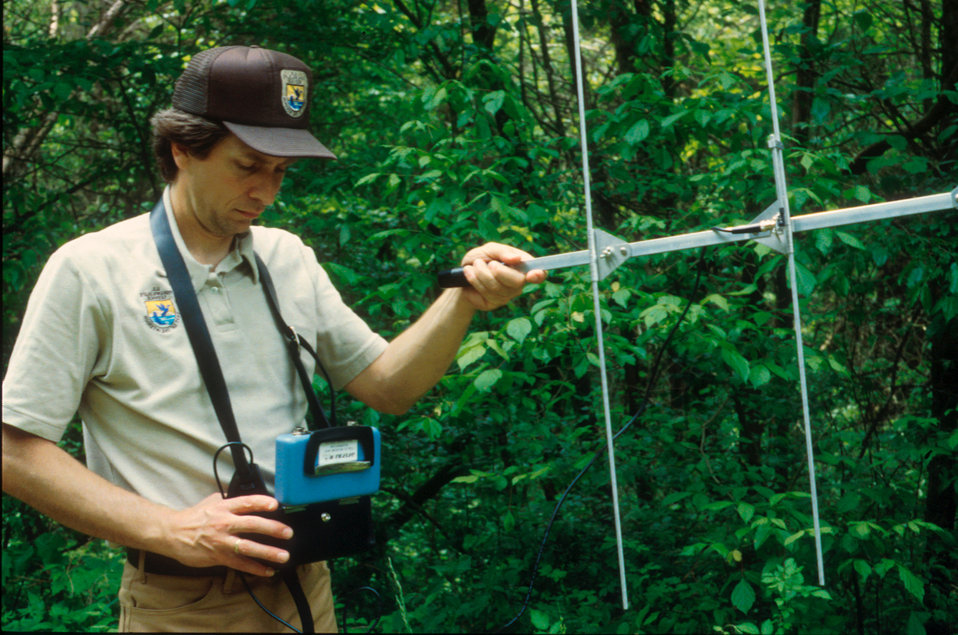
Using radio telemetry to track Indiana bats.

Scott Pruitt, BFO, Bat tracking
Photo by USFWS; Lori Pruitt